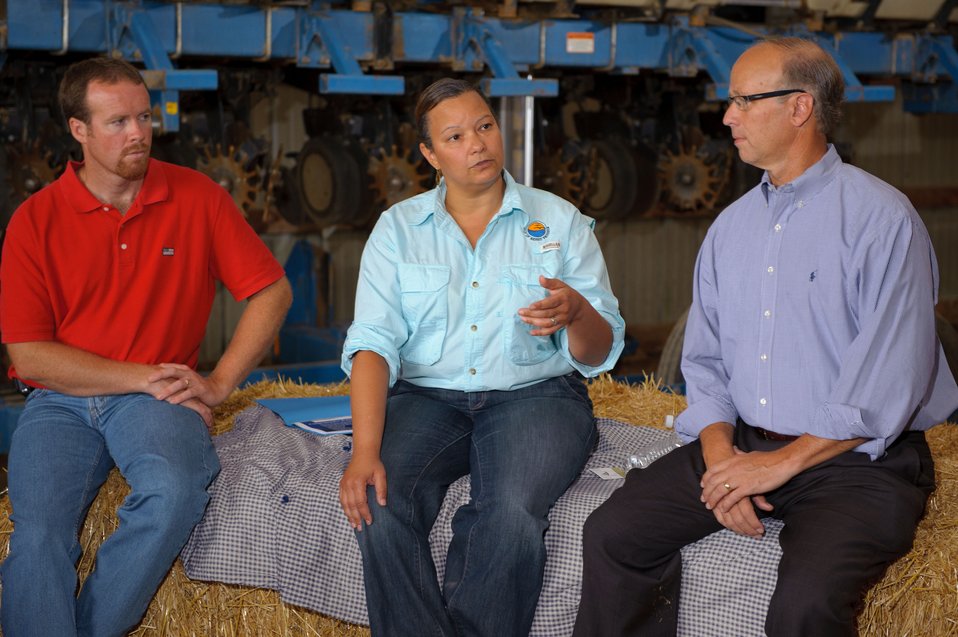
Administrator Jackson meets with local farmers and leaders in PA

Farm owner Jeff Balmer (left), EPA Administrator Lisa P. Jackson (center) and Pennsylvania State Senator Mike Brubaker (right) hold a meeting with local farmers and leaders at Balmer’s dairy farm in Lititz, Pa, discussing the common goal of clean and healthy water.